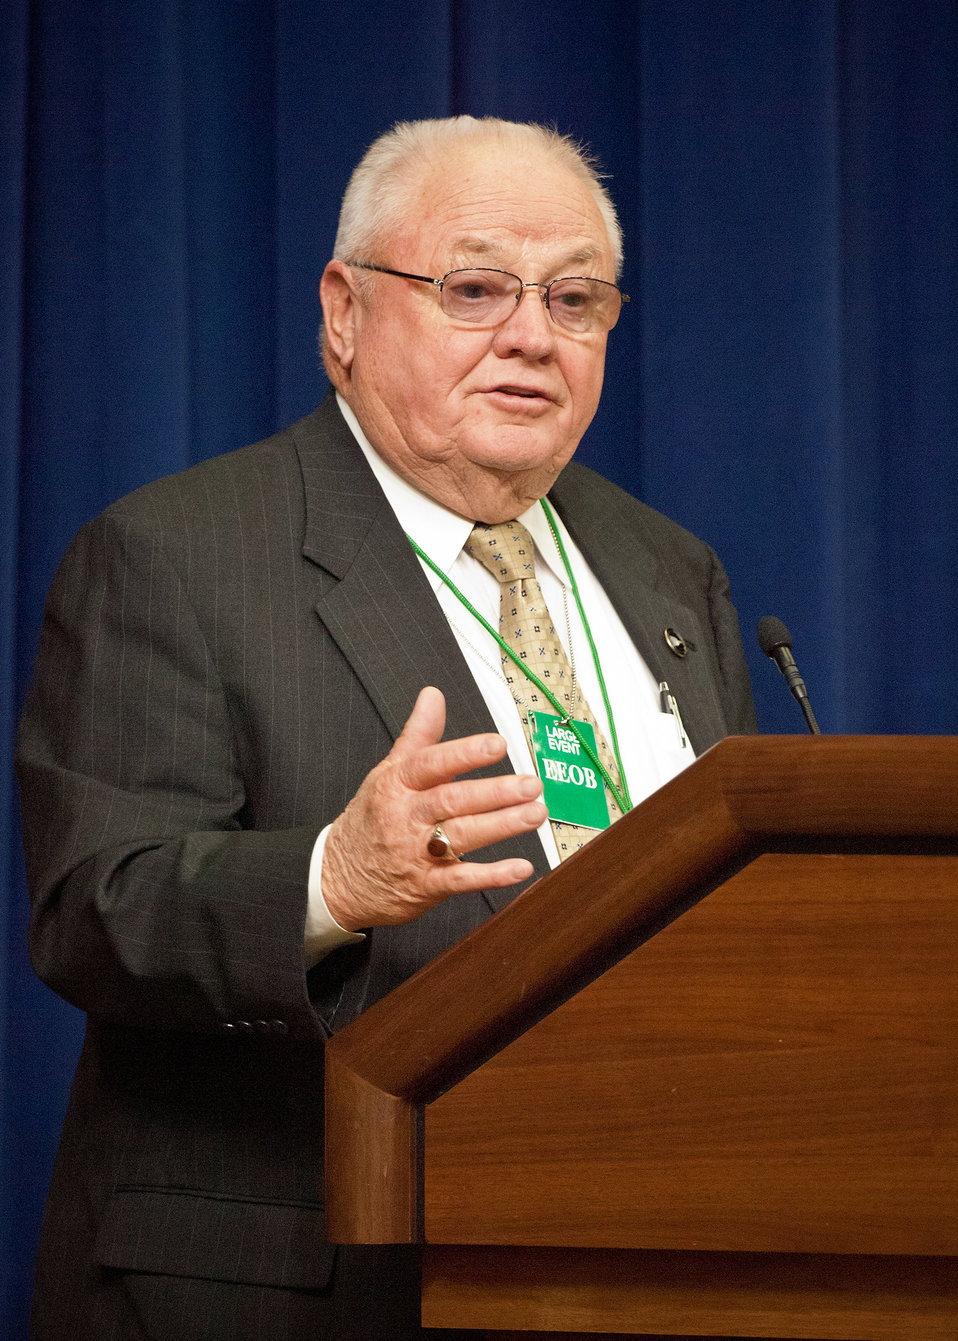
Jack Kibbe, President of the Iowa State Senate introduced Agriculture Secretary Tom Vilsack at the 11th Annual Meeting of State Agriculture and Rural Leaders at the Eisenhower Executive Office Building in Washington, D.C., on Friday, January 6, 2012.